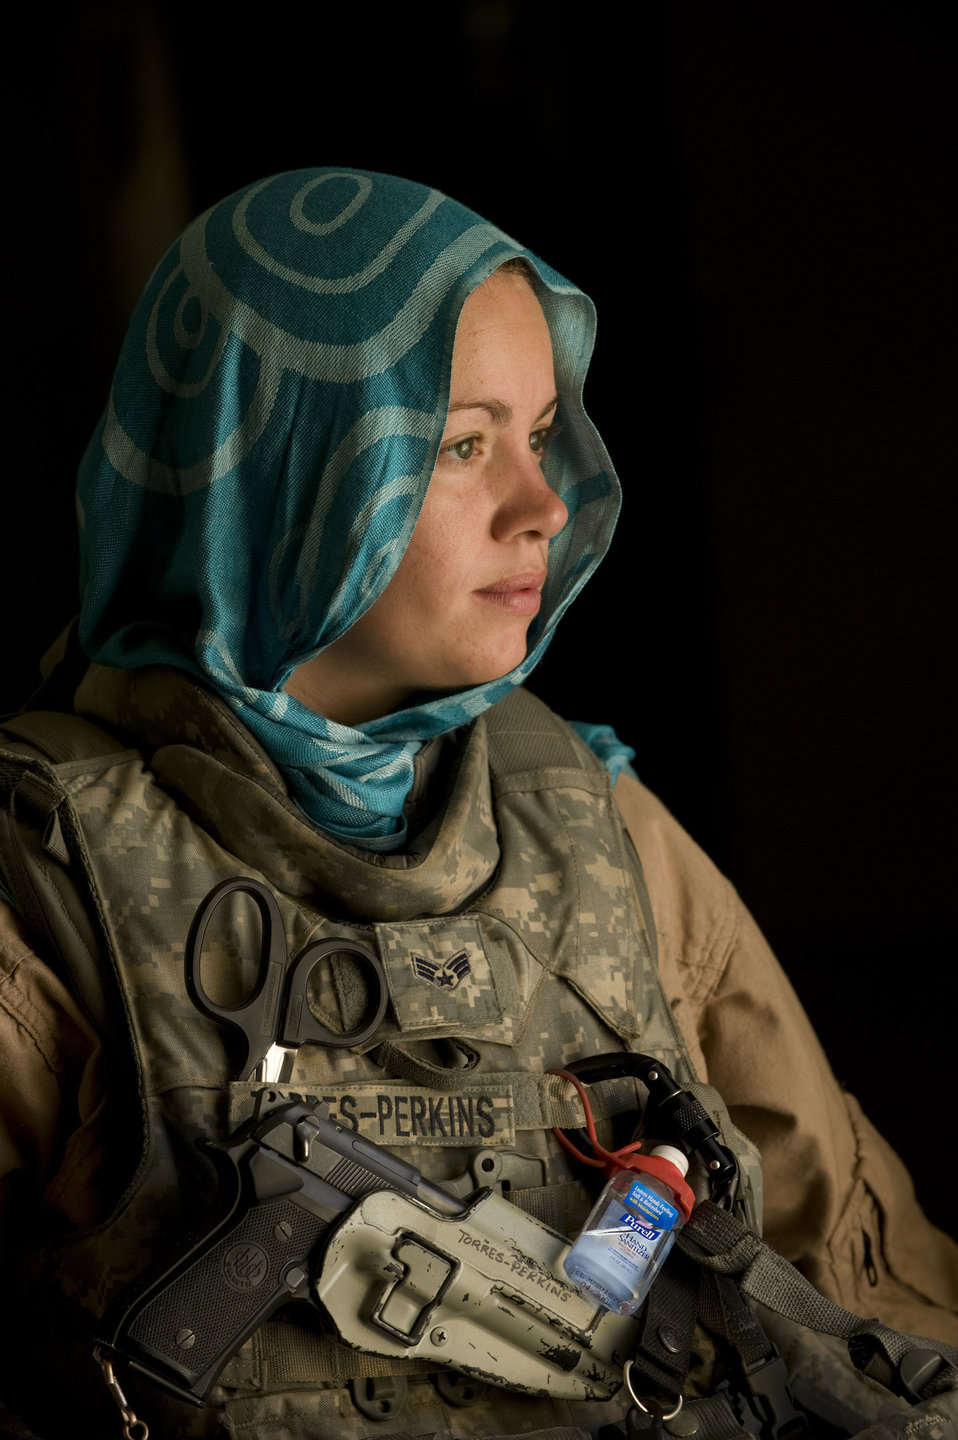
Zabul team combats malnutrition, unsafe water

Senior Airman Felicita Torres-Perkins is an Air Force medical technician deployed to the Zabul Provincial Reconstruction Team, or PRT. The Zabul PRT is working with local heath officials in Qalat, Afghanistan, to combat the causes of the high infant mortality rate such as unsanitary water supplies and malnutrition. She is deployed from McGuire Air Force Base, N. J., and wears the scarf in an effort to honor the customs of this region of the country.